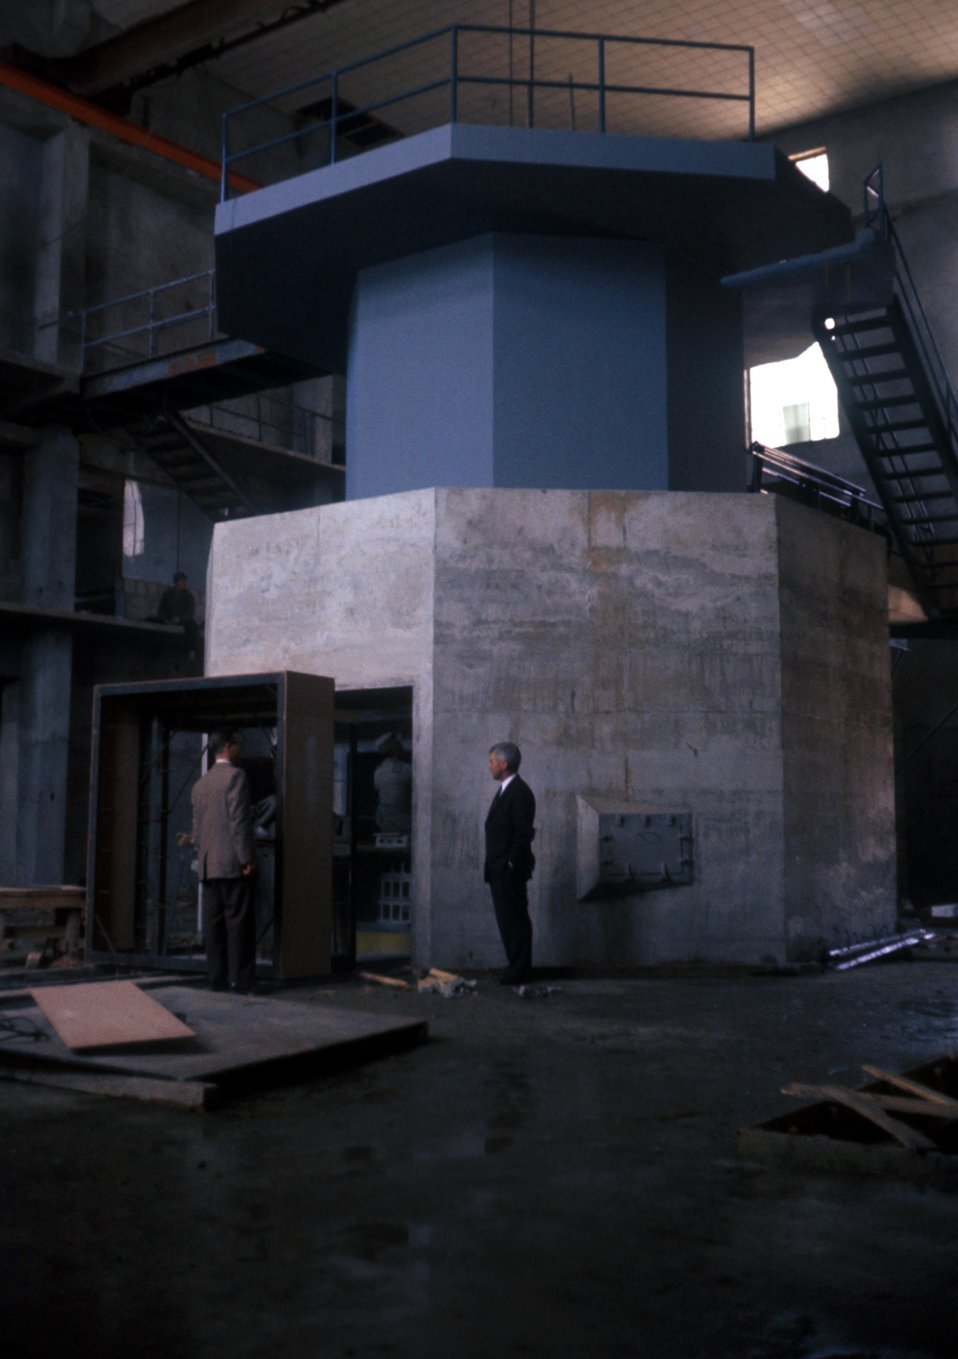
Republic of Korea, Triga II. D. Whitmore & WHP. Korean Atoms for Peace 100kw Triga Reactor. c. 1960